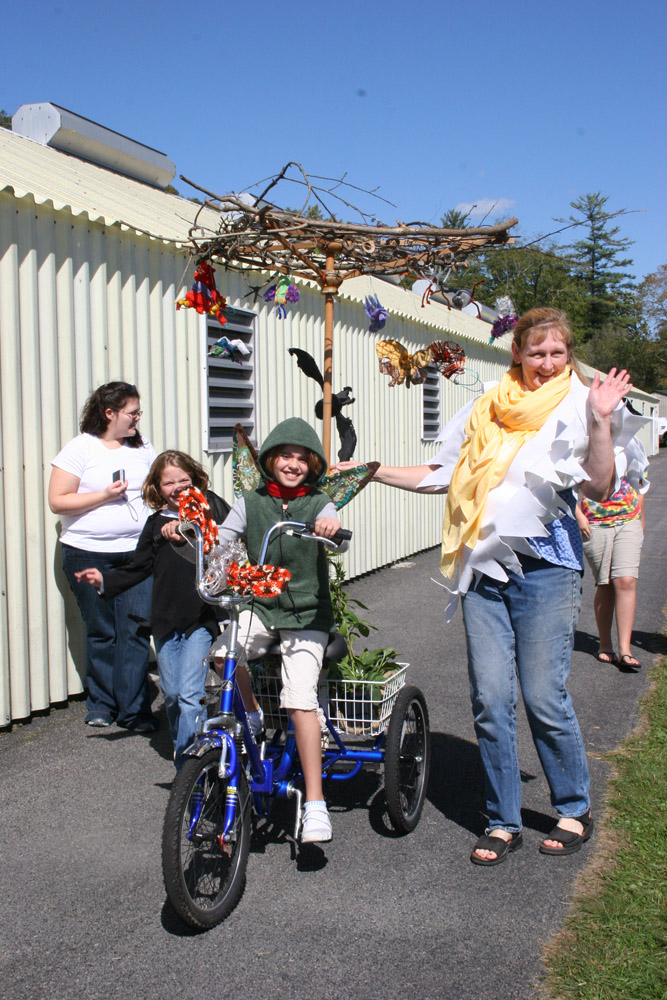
Freshwater Folk Festival

The 5th Annual Freshwater Folk Festival at White Sulphur Springs National Fish Hatchery in West Virginia.Credit: USFWS